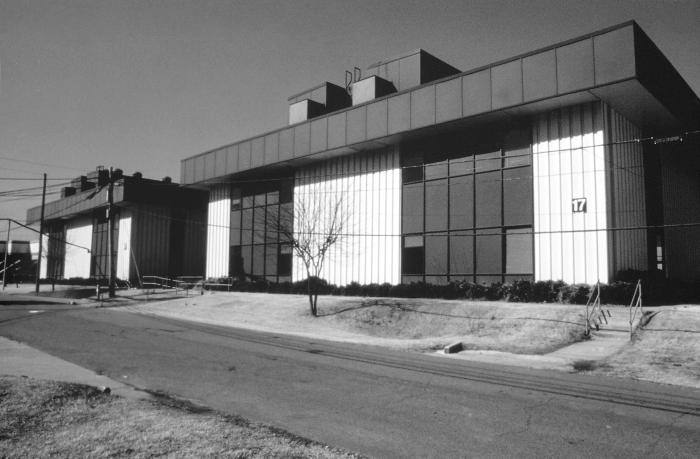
This 1986 photograph depicted Building 17 located on the Centers for Disease Control's 'Chamblee Campus' off of Buford Highway in Chamblee, Georgia.